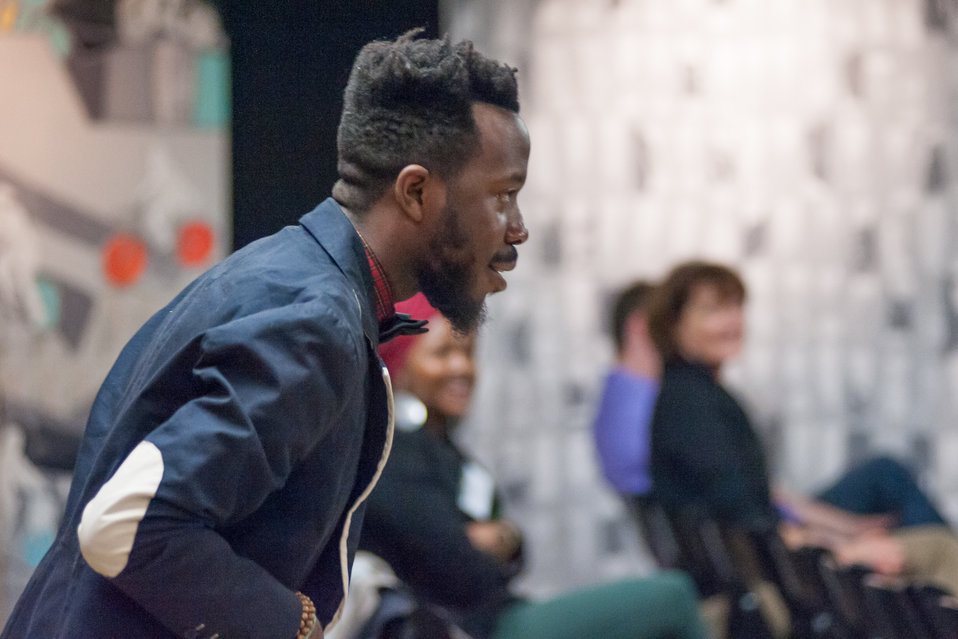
Mentor NDFW Event 2014

Mentor Foundation USA, in partnership with the National Institute on Drug Abuse (NIDA) and other key partners hosted a Youth Drug Facts Rally at the House of Sweden on Thursday, 30th January 2014. Approximately 200 students from five local high schools attended and had the opportunity to interact with top U.S. scientific experts, and inspiring guest speakers to “shatter the myths” about drugs and substance abuse, while pledging to stay drug-free.